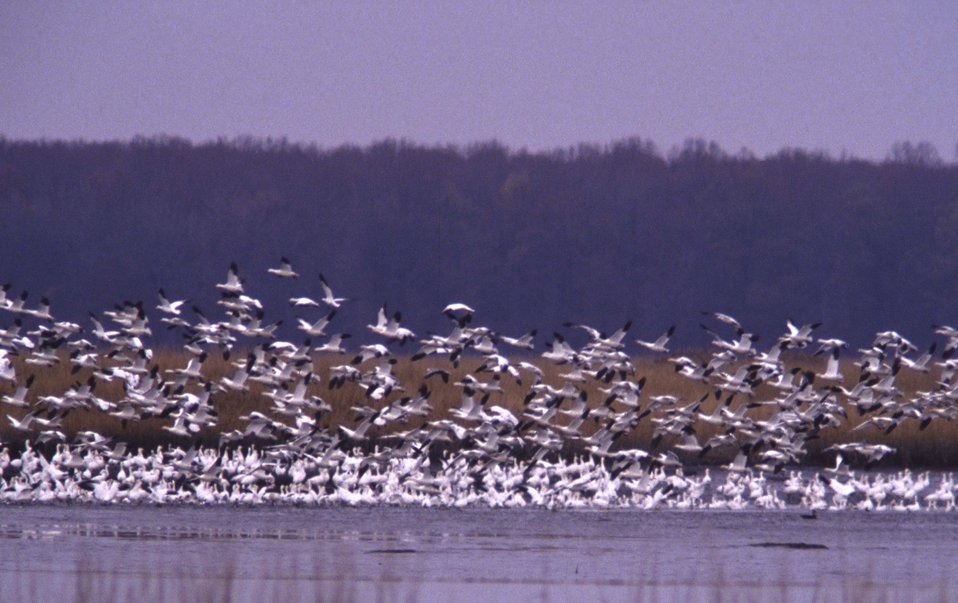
Snow Geese

Bombay Hook National Wildlife Refuge, DE.